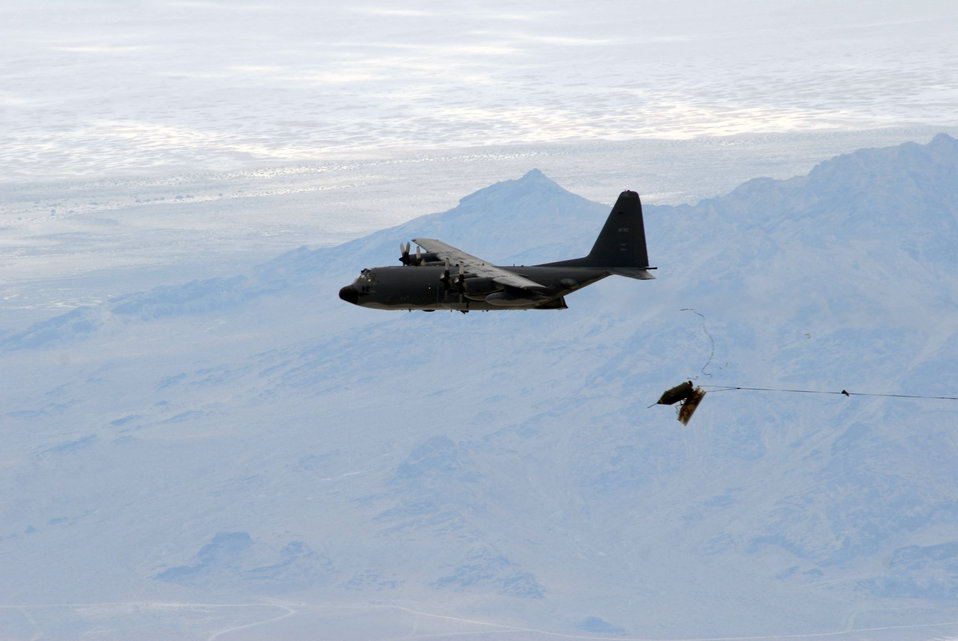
Duke Field Airmen drop 15,000-pound bomb

An MC-130E Combat Talon I from the 919th Special Operations Wing from Duke Field, Fla., drops the last operational 15,000-pound BLU-82 bomb July 15 at the Utah Test and Training Range.